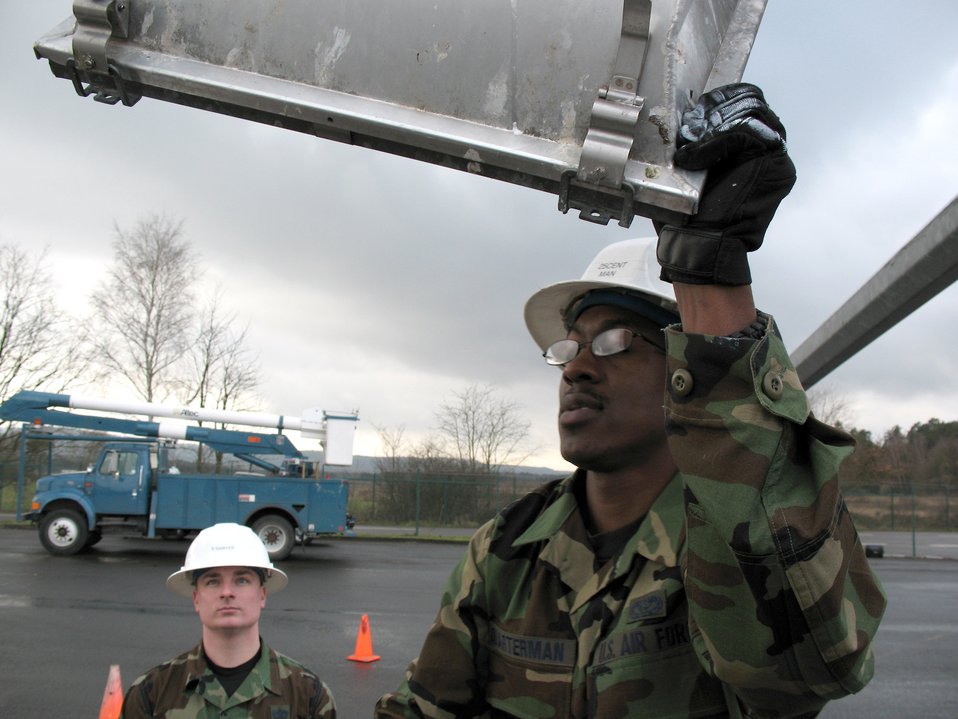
Mission failure means 'lights out' for engineers

Civil engineers at Ramstein Air Base, Germany, lower an 80-foot light pole on the flightline Feb. 13 to repair non-working lights.